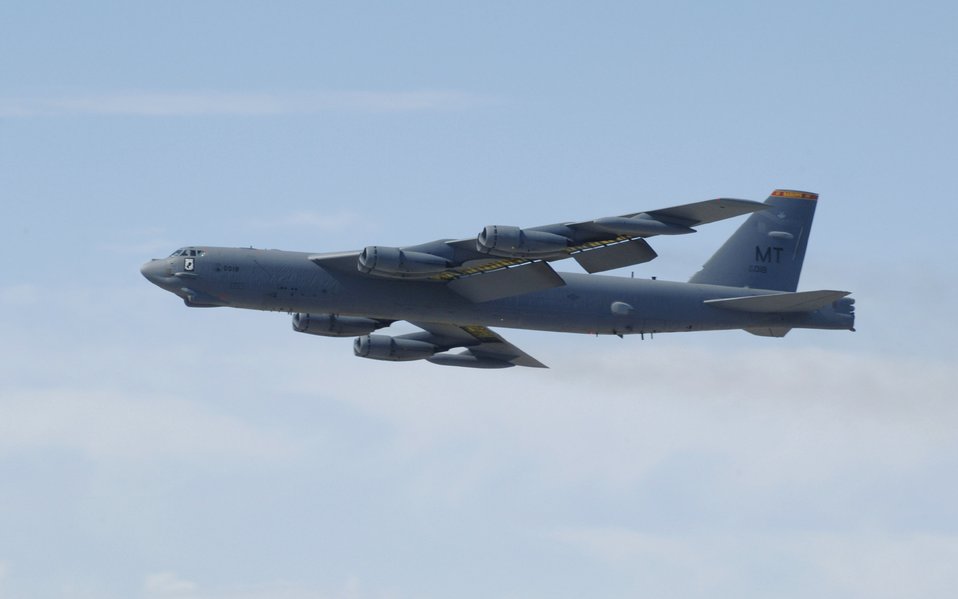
Rapid launch at Minot

A B-52 Stratofortress is airborne at Minot Air Force Base, N.D., during a nine-ship rapid-launch generation exercise on Thursday, April 27, 2006. Generation exercises test the base's ability to perform its mission.